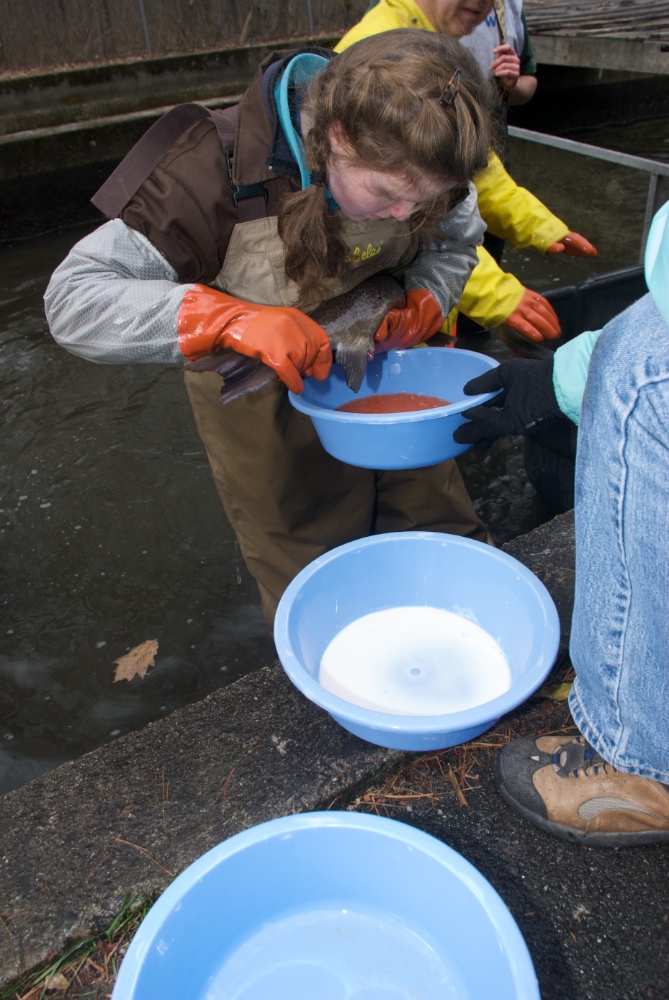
Richard Cronin National Salmon Station

Volunteers harvesting salmon eggs at the Richard Cronin National Salmon Station in Sunderland, MA.